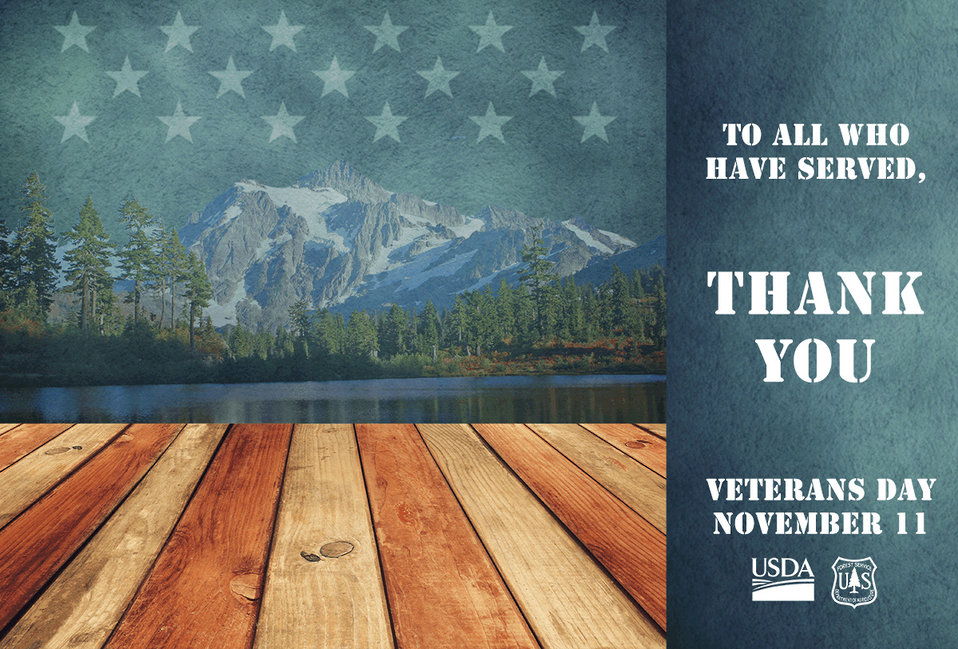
Veterans Day rectangle

A U.S. Department of Agriculture Veterans Day (November 11) poster thanks the U.S. military for their service.